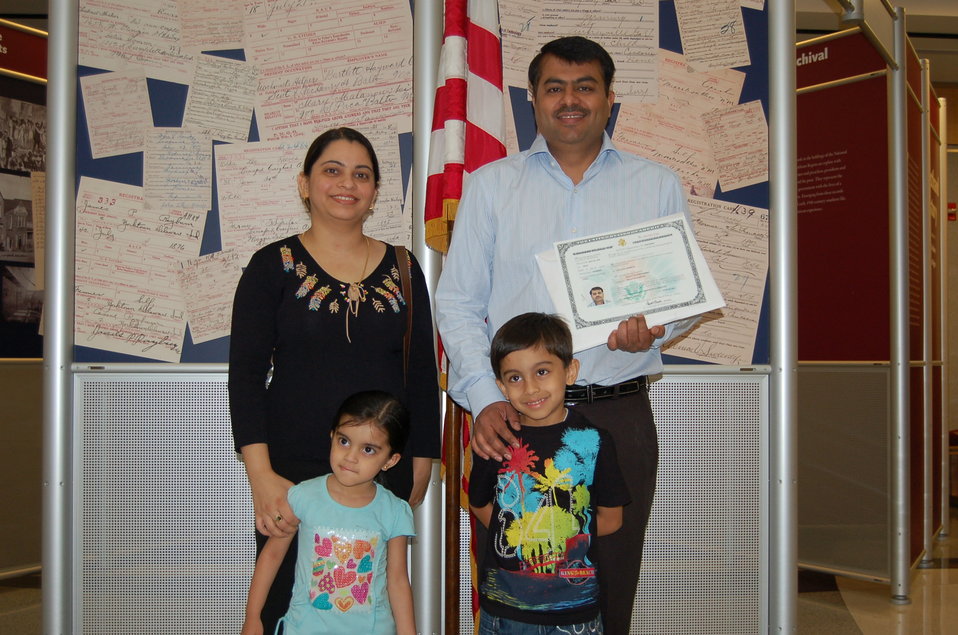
New Citizens